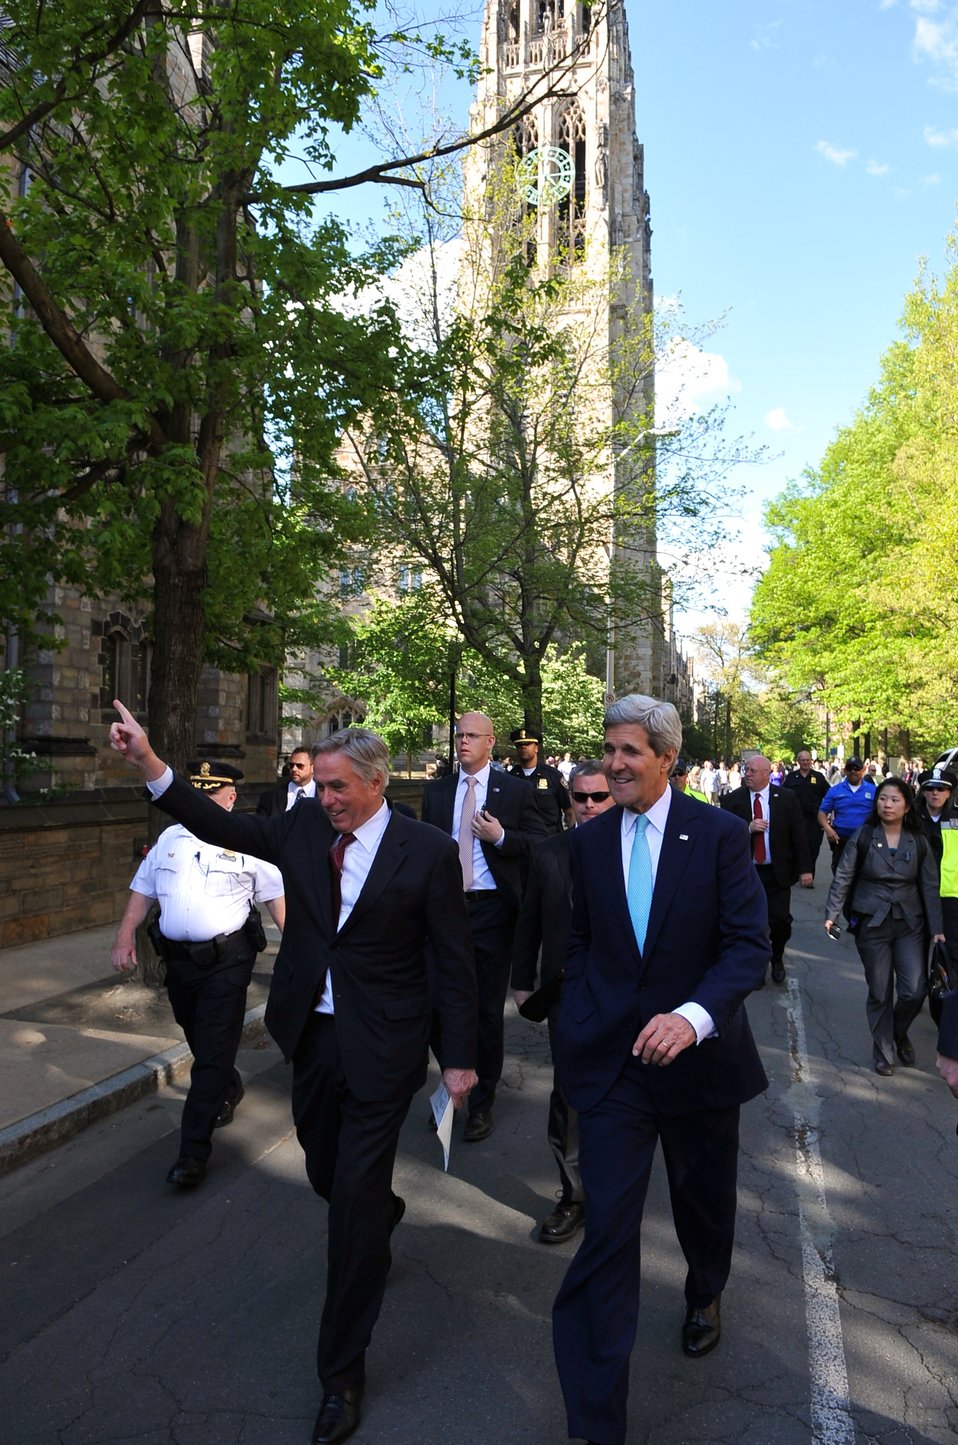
Secretary Kerry, Senior Advisor Thorne Walk Across Yale University Campus

U.S. Secretary of State John Kerry and State Department Senior Advisor David Thorne wave to passersby as they cross the Yale University campus in New Haven, Connecticut, after the 1966 graduates participated in Class Day ceremonies on May 18, 2014.